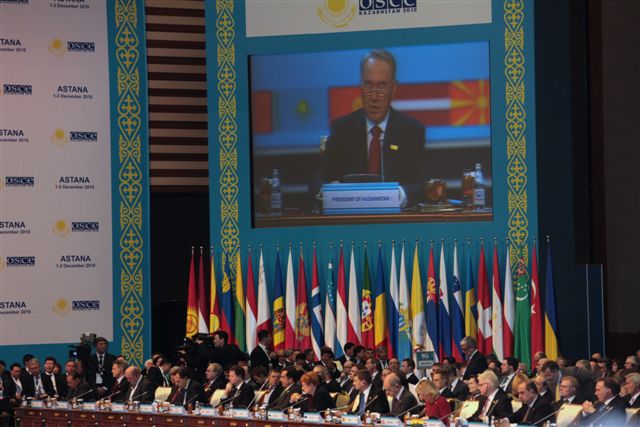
Secretary Clinton Participates in the OSCE Summit Plenary Session

U.S. Secretary of State Hillary Rodham Clinton participates in the OSCE Summit Plenary Session in Astana, Kazakhstan, on December 1, 2010.